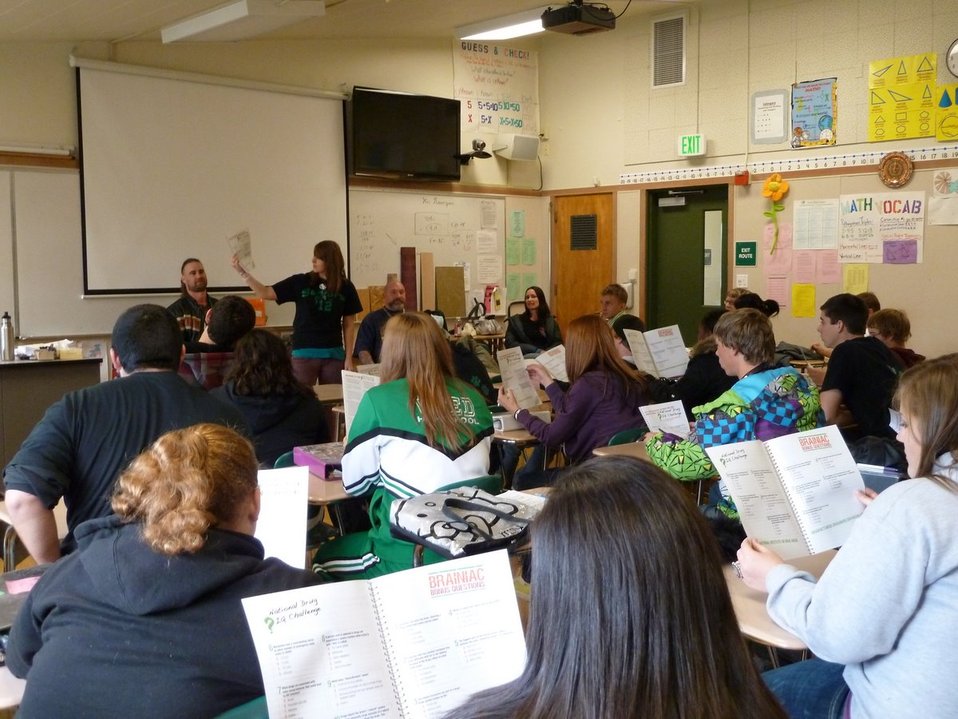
Siskiyou County, CA Drug Facts Week Photos

Torrin Todd, senior at Weed High School giving the National Drug Fact Week IQ Challenge to a class. She organized events at the high school and in the community for National Drug Facts Week for her senior project.